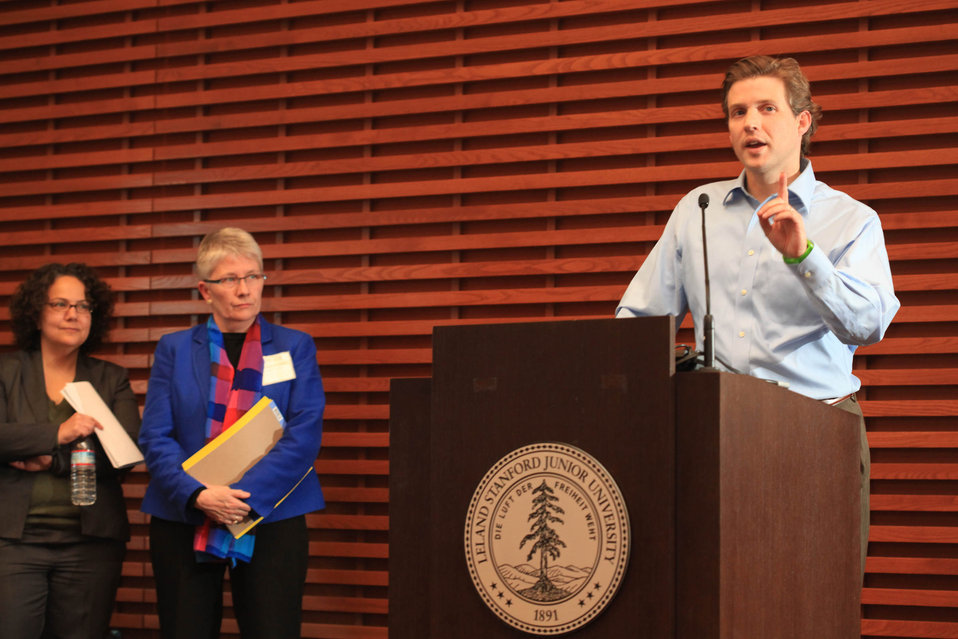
Senior Advisor Alec Ross Delivers Remarks

Nancy Sutley, the Chair of the White House Council on Environmental Quality, left, and Assistant Secretary of State for Oceans and International Environmental and Scientific Affairs Dr. Kerri-Ann Jones stand by as Alec Ross, Senior Advisor for Innovation in the Office of Secretary of State Hillary Clinton, delivers remarks during the Introductory session of the USRIO 2.0 conference at the Oberndorf Event Center of the Stanford Graduate School of Business Knight Center in Stanford, California, on February 2, 2012.